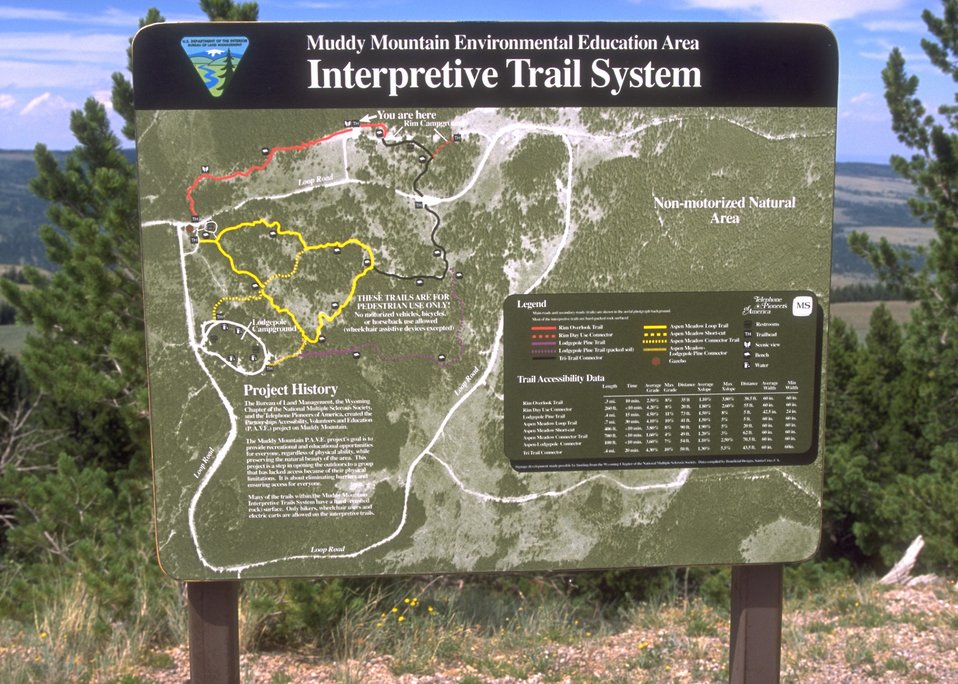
Muddy Mountain Recreation Area, Casper Field Office.